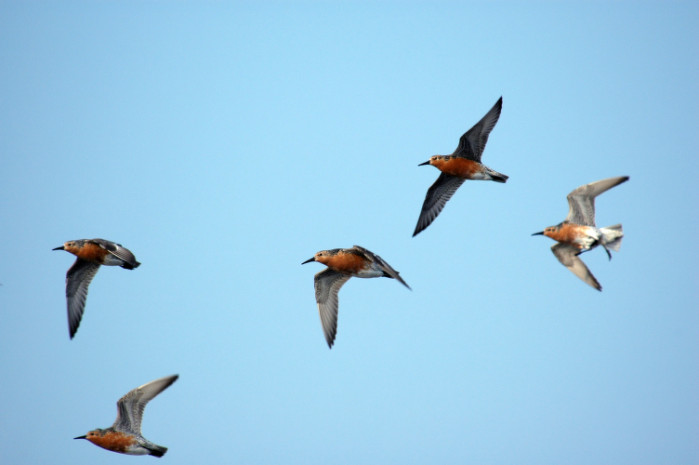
redknots in flight, Delaware Bay